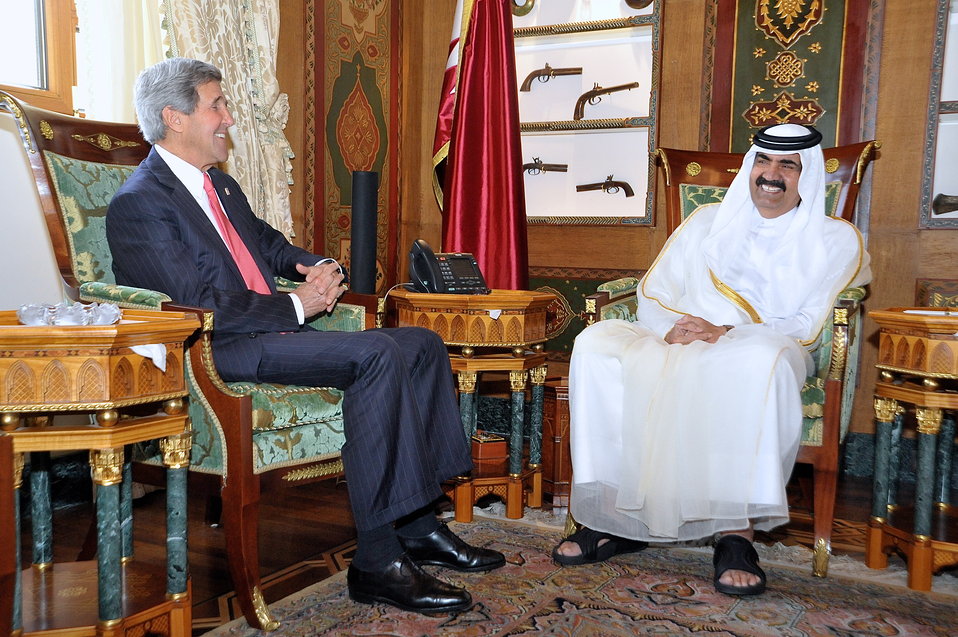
Secretary Kerry Meets With Amir Hamad bin Khalifa al-Thani

U.S. Secretary of State John Kerry meets with Qatari Amir Hamad bin Khalifa al-Thani in Doha, Qatar, on June 23, 2013.